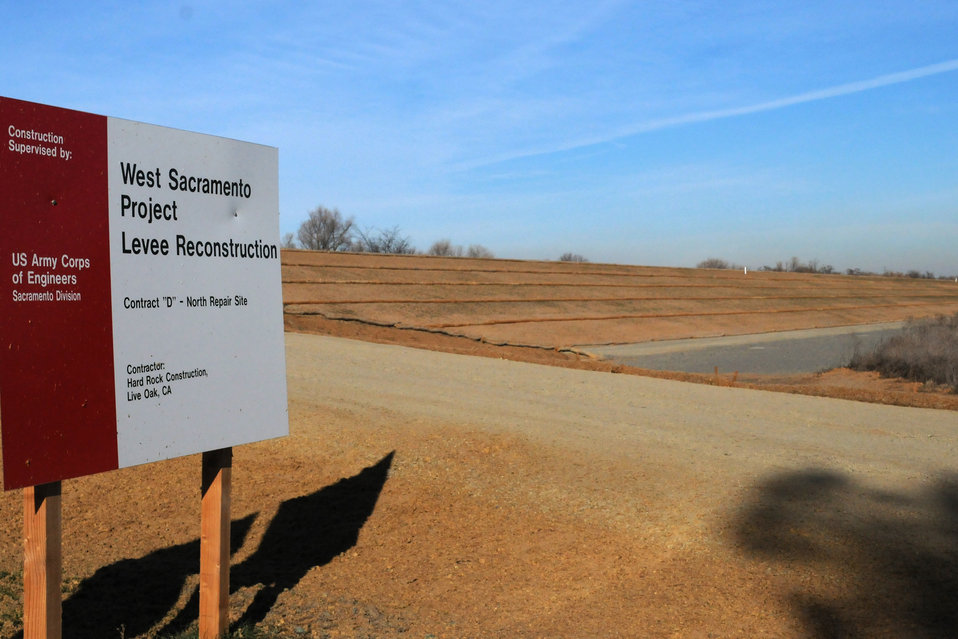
Corps completes Yolo Bypass levee repairs

Following a high water event in 2006, levee sites near highway 80 and the Yolo Bypass began to slump, essentially sinking into the foundation beneath it. The U.S. Army Corps of Engineers recently completed repairs on the second of those two sites, adding a gravel drain and reconstructing a 2,000-foot stretch of levee. The Corps completed a similar 400-foot levee piece in 2009 as part of the West Sacramento Project, a joint effort with the West Sacramento Area Flood Control Agency and the Central Valley Flood Protection Board to improve the levees surrounding West Sacramento.